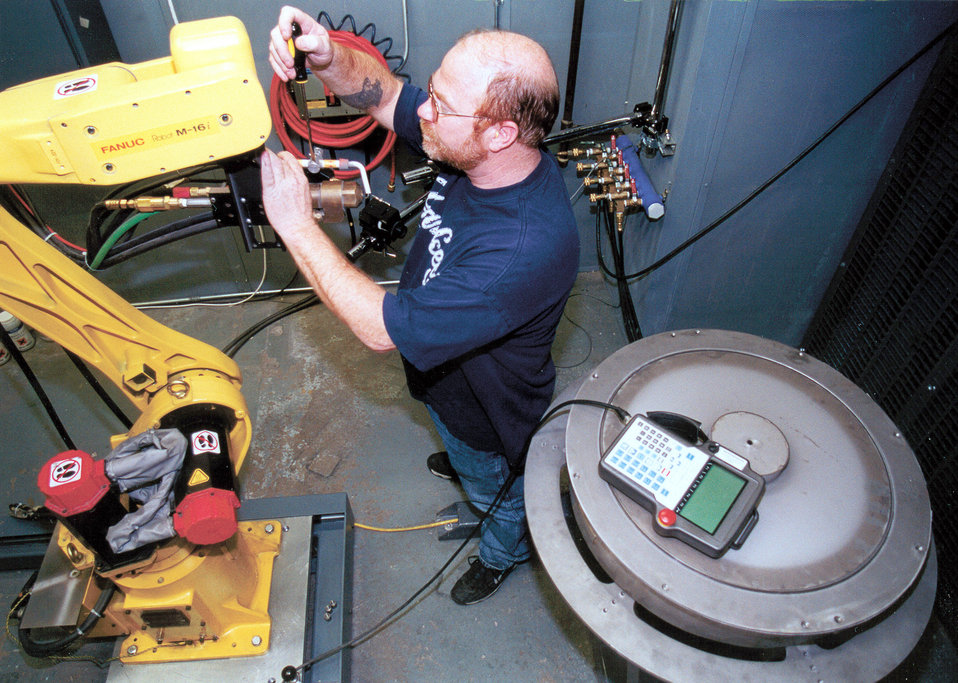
New technology replaces chrome

TINKER AIR FORCE BASE, Okla. -- James Genzler adjusts a thermal spray gun that is used to coat aircraft engine parts here with tungsten carbide and cobalt. The powdered mixture is being tested to replace cancer-causing chrome.